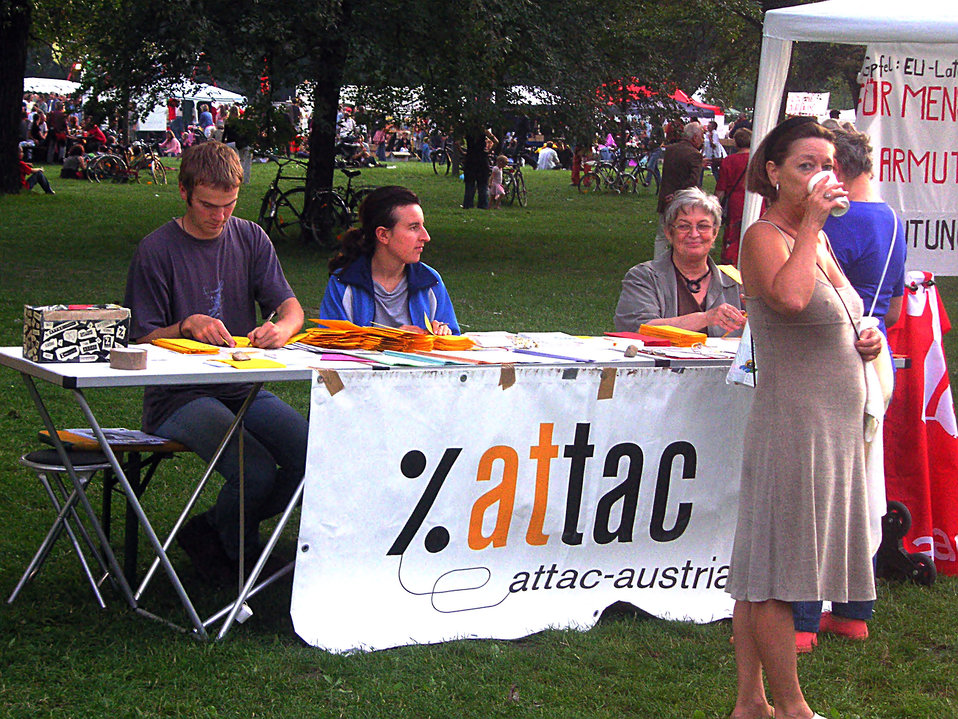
An ATTAC stall at the Volksstimmefest, Vienna, Austria, September 4, 2005. The Volksstimmefest is an annual two-day event organized by the Communist Party of Austria at the Jesuitenwiese, Prater, Leopoldstadt. It takes place on the first weekend in September.